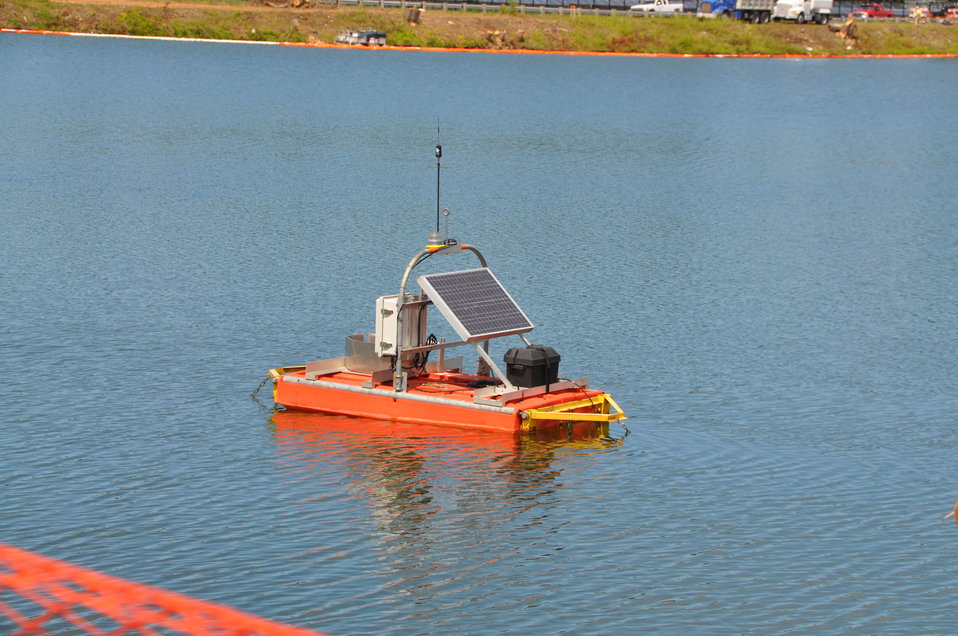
August 2012, Venture a guess what this is?

Sitting in Silver Lake, this floating device monitors basic water quality while excavation takes place.